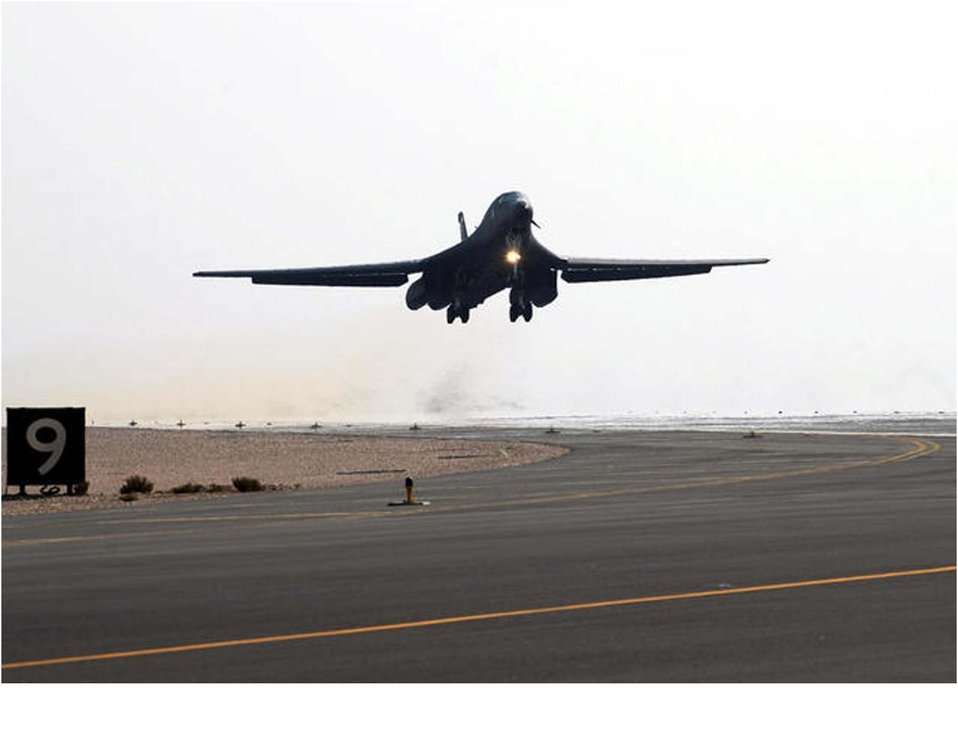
B-1B

An Air Force B-1B Lancer aircraft takes off from the runway of an air base in Southwest Asia, for a mission as part of Operation Enduring Freedom. The B-1B is a multi-role, long-range bomber capable of flying intercontinental missions without refueling.